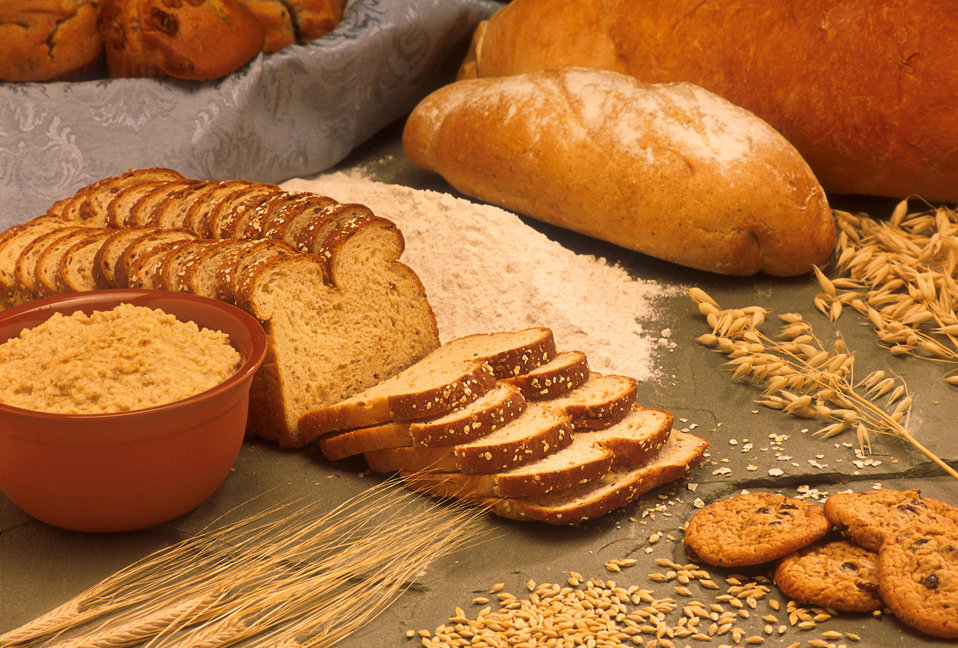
Oats, barley, and some products made from them.